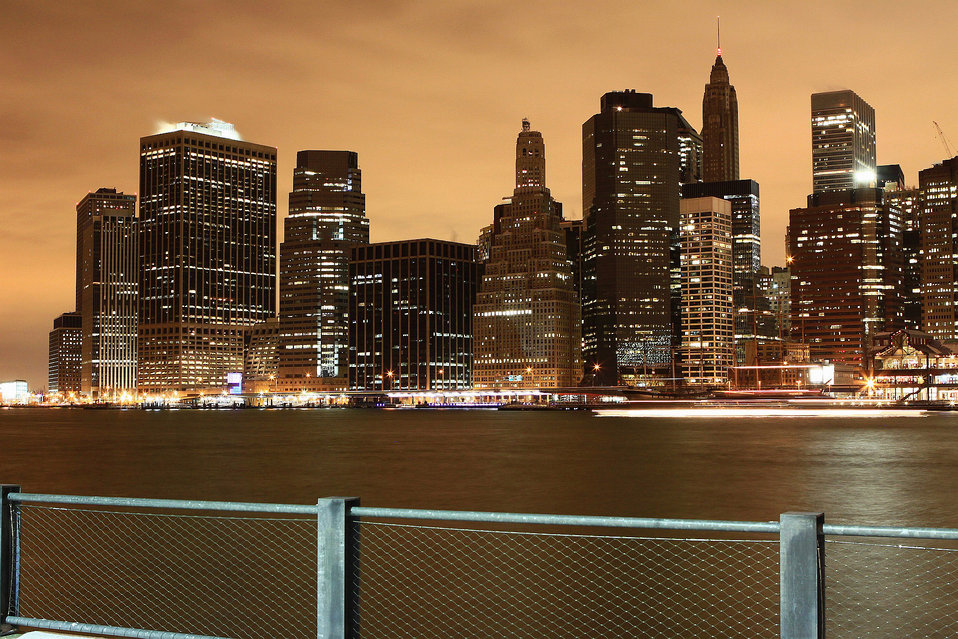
City lights

Wall street district at night.